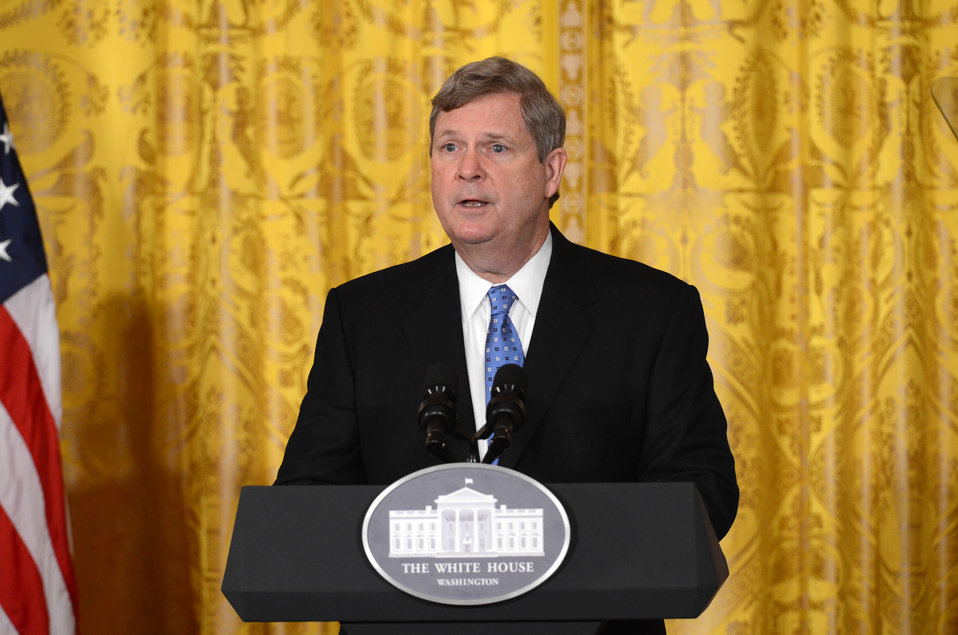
Agriculture Secretary Tom Vilsack announces proposed guidelines for comprehensive school wellness policies and the launching of a new 'School Nutrition Environment and Wellness Resources' website, which includes sample wellness policy language for school districts and a dedicated page of resources for food marketing practices on the school campus in the East Room of the White House in Washington, D.C. on Tuesday, Feb. 25, 2014. The bipartisan Healthy, Hunger-Free Kids Act of 2010 mandated that the U.S. Department of Agriculture (USDA) set guidelines for what needed to be included in local school wellness policies in areas such as setting goals for nutrition education and physical activity, informing parents about content of the policy and implementation, and periodically assessing progress and sharing updates as appropriate. The proposed guidelines would ensure that foods and beverages marketed to children in schools are consistent with the recently released Smart Snacks in School standards and ensuring that unhealthy food is not marketed to children is one of the First Lady's top priorities.